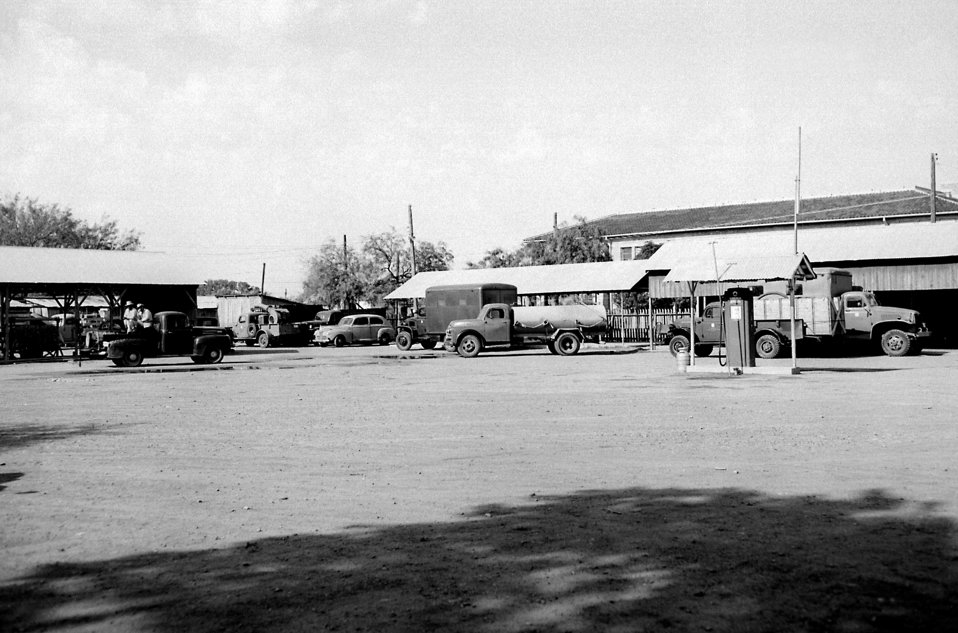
A 1954 photograph of mosquito spray equipment used in Laredo, TX.